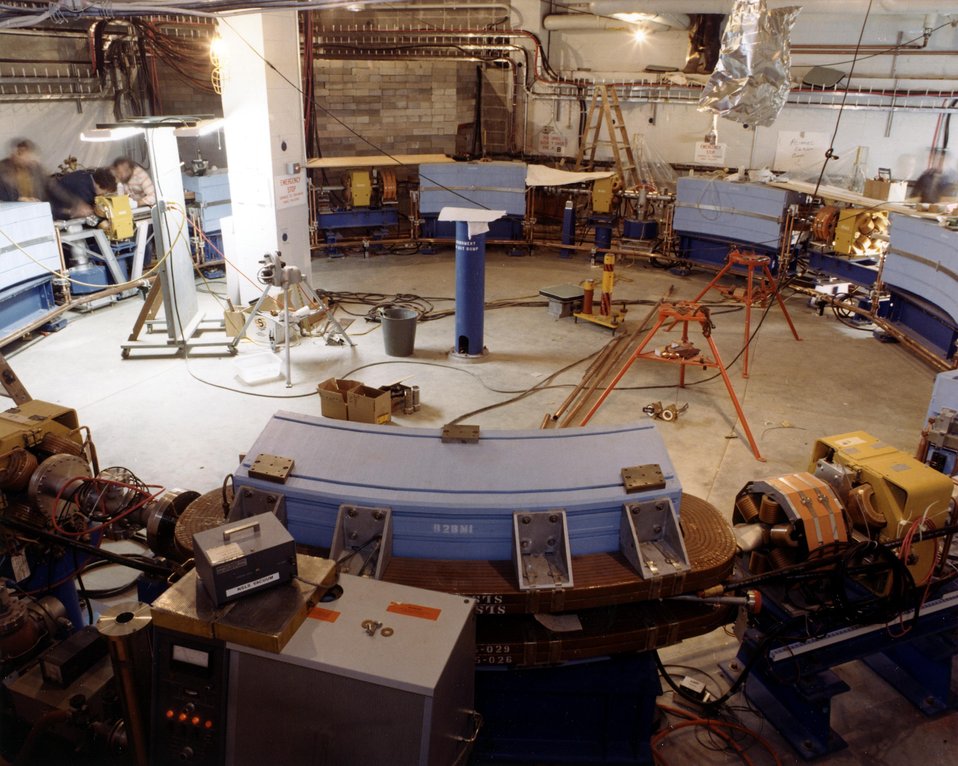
TECHNICIANS ARE ASSEMBLING THE VACUUM ULTRAVIOLET RING.

THE NSLS WILL ACCELERATE AND STORE ELECTRONS AT A SPEED CLOSE TO THAT OF LIGHT TO PRODUCE AN ENTIRE SPECTRUM OF RADIATION, FROM INFRARED THROUGH X-RAYS, FOR UNIQUE APPLICATIONS IN MANY FIELDS OF SCIENCE. THE FACILITY WILL CONSIST OF TWO ELECTRON STORAGE RINGS. THE SMALLER RING WILL ACCELERATE ELECTRONS TO 700 MILLION ELECTRON VOLTS TO PRODUCE ULTRAVIOLET RADIATION, AND THE LARGER RING WILL ACCELERATE ELECTRONS TO 2500 MILLION ELECTRON VOLTS TO PRODUCE X-RAYS. THE ULTRAVIOLET LIGHT CAN BE USED TO STUDY: CHEMICAL REACTIONS AND STRUCTURES, THE PROPERTIES OF PURE METALS, ALLOYS, AND INSULATING MATERIALS, AND THE TRANSFER OF ENERGY IN BIOLOGICAL SYSTEMS. X-RAY LITHOGRAPHY MAY BE USED BY THE ELECTRICAL INDUSTRY IN THE PRODUCTION OF MICROSCOPIC PRINTED CIRCUITS FOR COMPUTERS AND MICROPROCESSORS. X-RAY MICROSCOPY COMPLEMENTS ELECTRON MICROSCOPY, PERMITTING OPERATIONS THAT WOULD BE IMPOSSIBLE WITH AN ELECTRON MICROSCOPE.